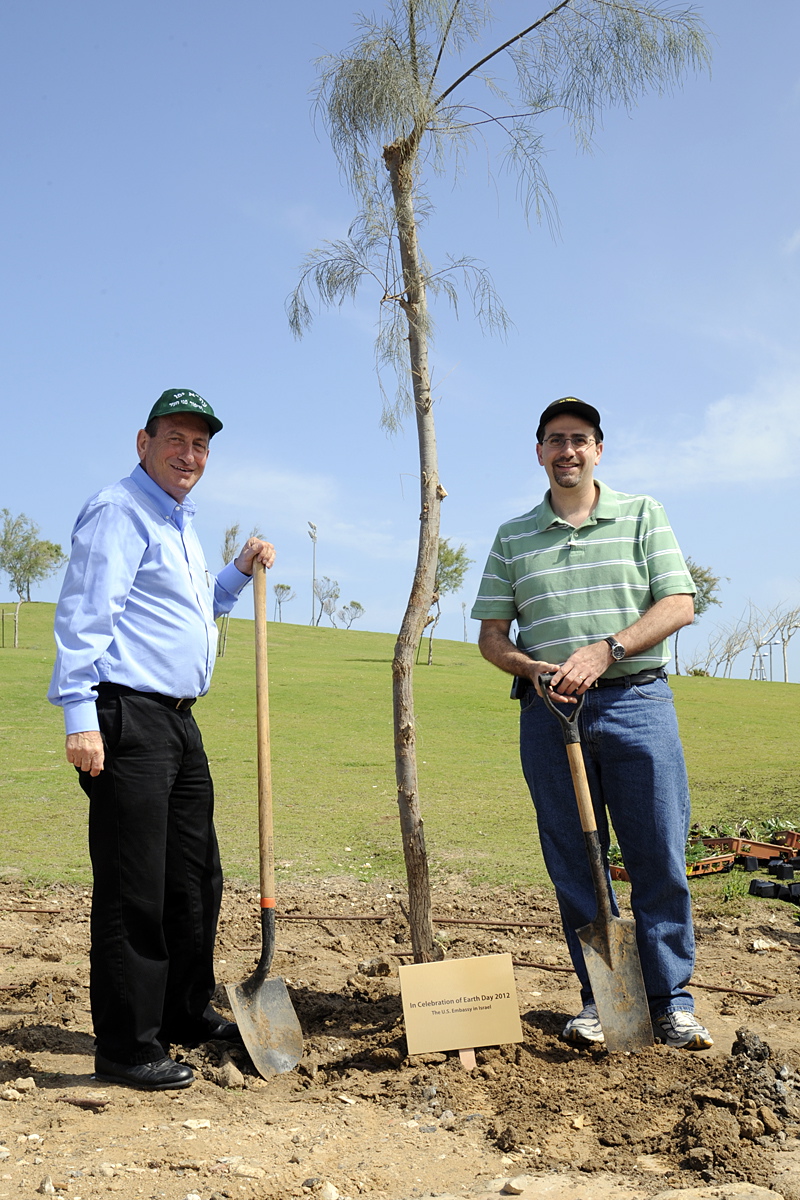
Ambassador Shapiro and Tel Aviv Mayor Huldai Plant Trees

U.S. Ambassador to Israel Daniel Shapiro and Tel Aviv Mayor Ron Huldai plant a pair of trees in honor of Earth Day 2012 in the vicinity of the beach at Jaffa Slope Park, on April 20, 2012.